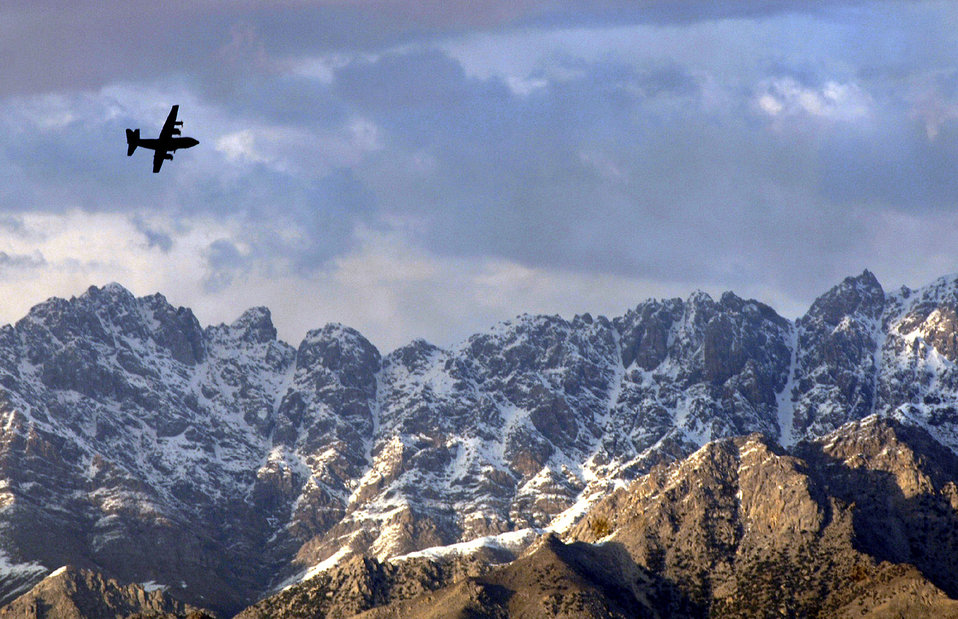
CENTAF Airpower Summary for March 23, 2007

A C-130 Hercules flies over mountainous Afghanistan terrain March 22 on the way to deliver supplies to Bagram Air Base.